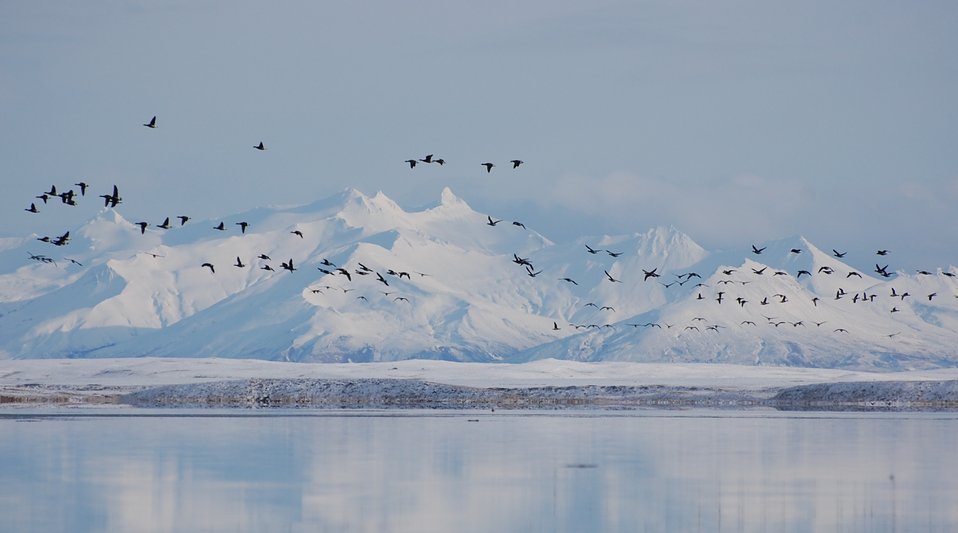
Brant, Izembek Lagoon, Izembek National Wildlife Refuge
Photo by Kristine Sowl, USFWS, Public domain